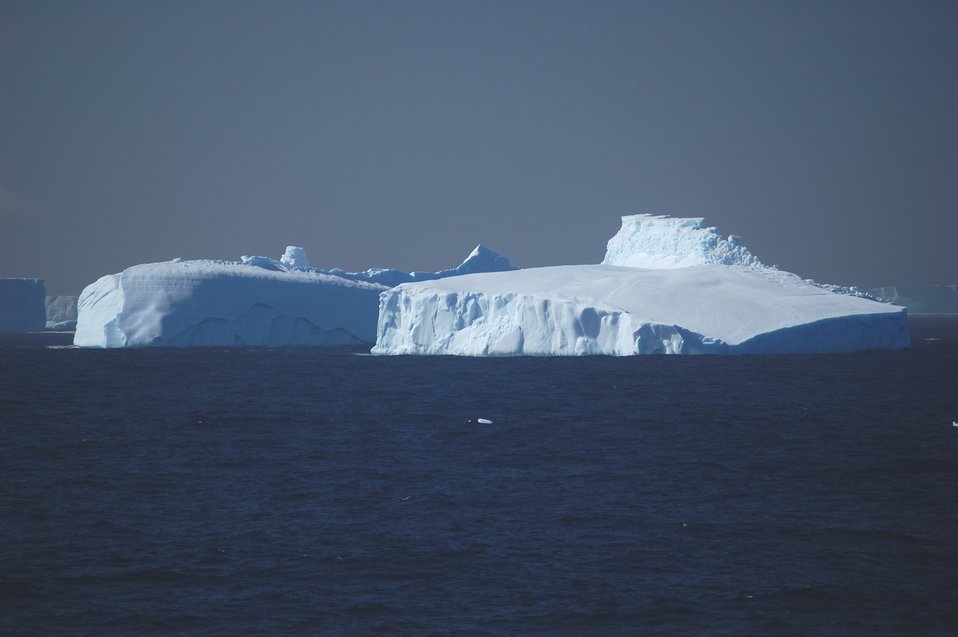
Icebergs